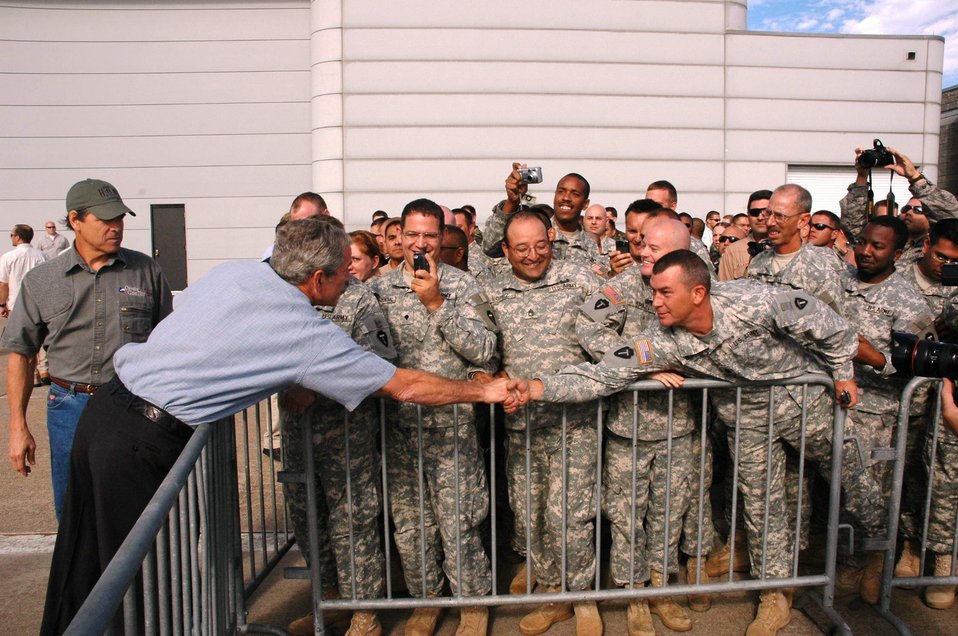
President Bush greets servicemembers supporting Ike relief

President George W. Bush shakes hands with military members Sept. 16 at Ellington Field, Texas, before assessing the damage from Hurricane Ike from the Marine 1 helicopter around the Gulf Coast. Active duty, Reserve and Guard servicemembers are assisting with the relief effort after the storm ravaged the region.